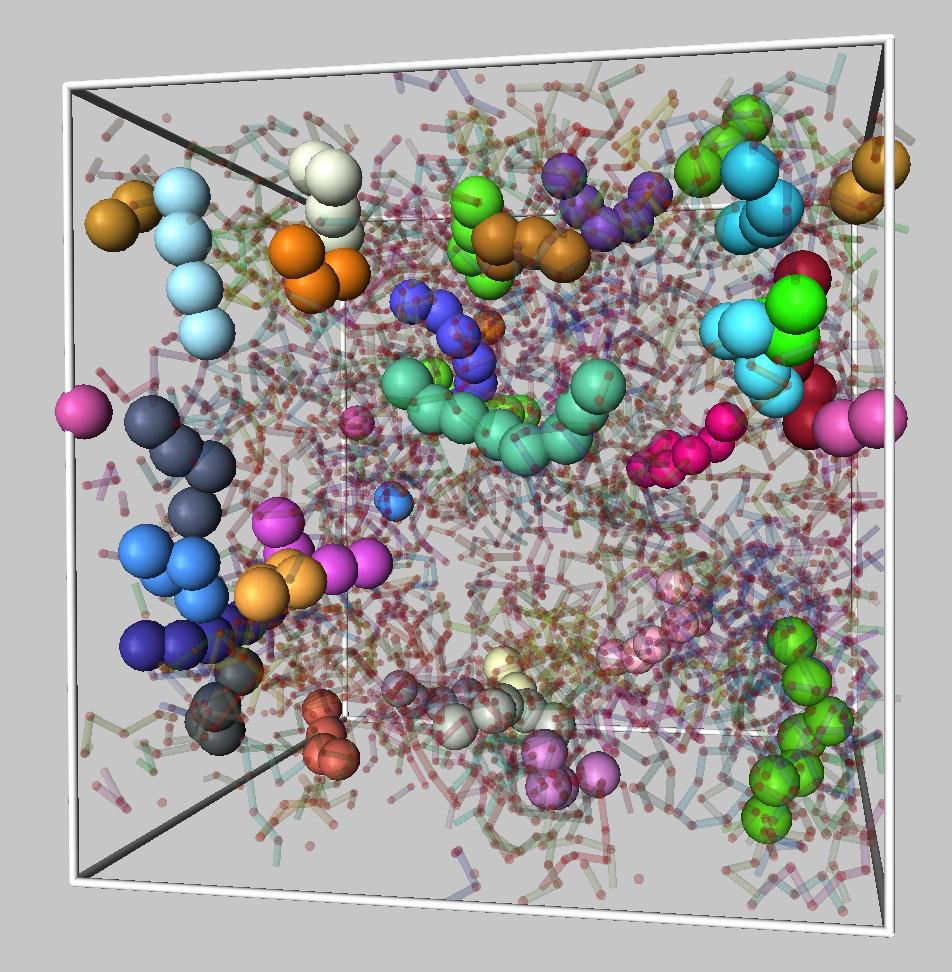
Polymer Glass Simulation

Soft materials such as complex polymers pose particular problems for theory and modeling. This molecular dynamics simulation done at NIST shows interactions in a polymer mixture as it solidifies. The work has applications in fields as diverse as protein preservation, batteries and polymer nanocomposites.